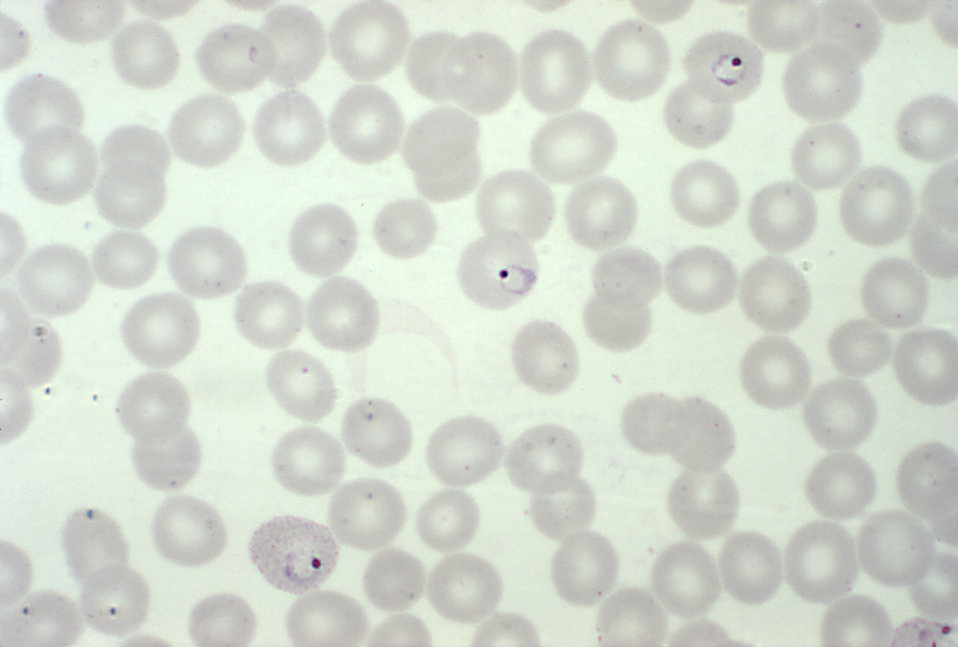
This micrograph reveals the presence of three P. vivax ring form parasites inside infected host RBCs; Mag. 1000X.